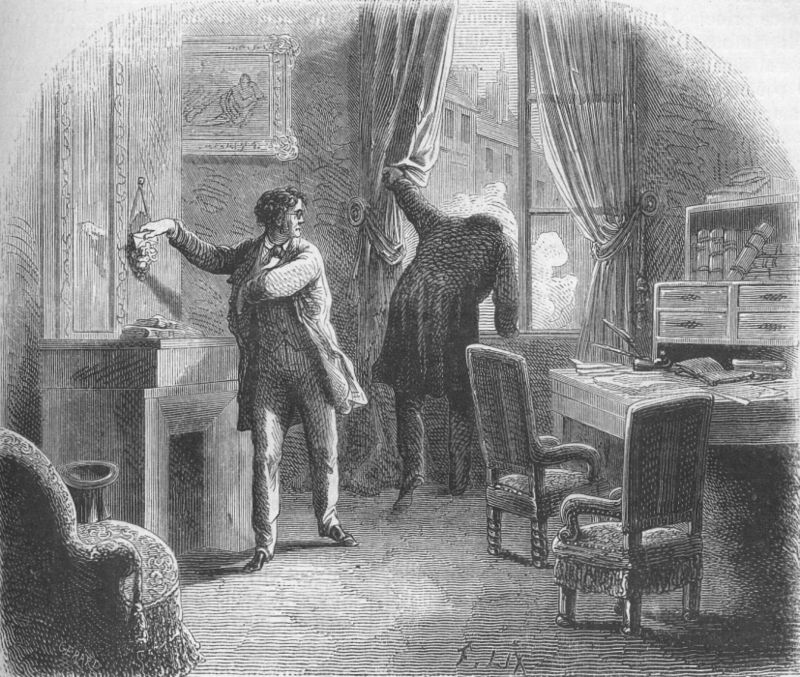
An illustration from Jules Verne's essay 'Edgard Po√´ et ses oeuvres' (Edgar Poe and his Works,1862) drawn by Frederic Lix or Yan' Dargent. Polski: Ilustracja artyku≈Çu Juliusza Verne'a 'Edgard Po√´ et ses oeuvres' (Edgar Poe i jego dzie≈Ça, 1862) autorstwa Frederica Lixa lub Yan' Dargenta. Fran√ßais†: Jules Verne: 'Edgard Po√´ et ses oeuvres' (1862), dessins par Frederic Lix ou Yan' Dargent. Orginal text: Fran√ßais†: La lettre vol√©e. Dupin et D***.